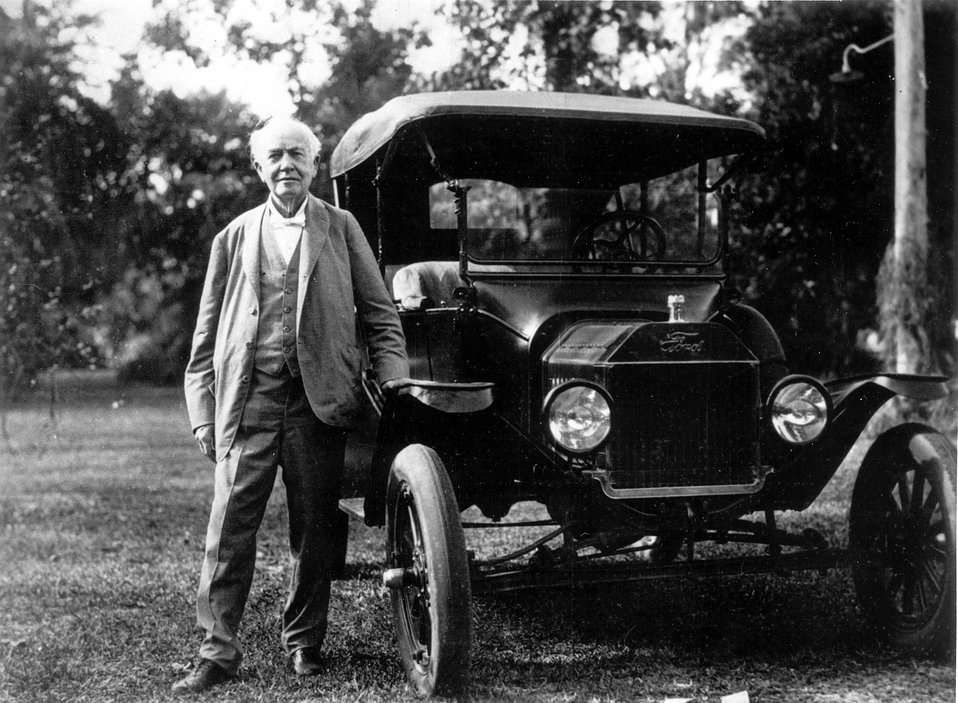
Henry Ford